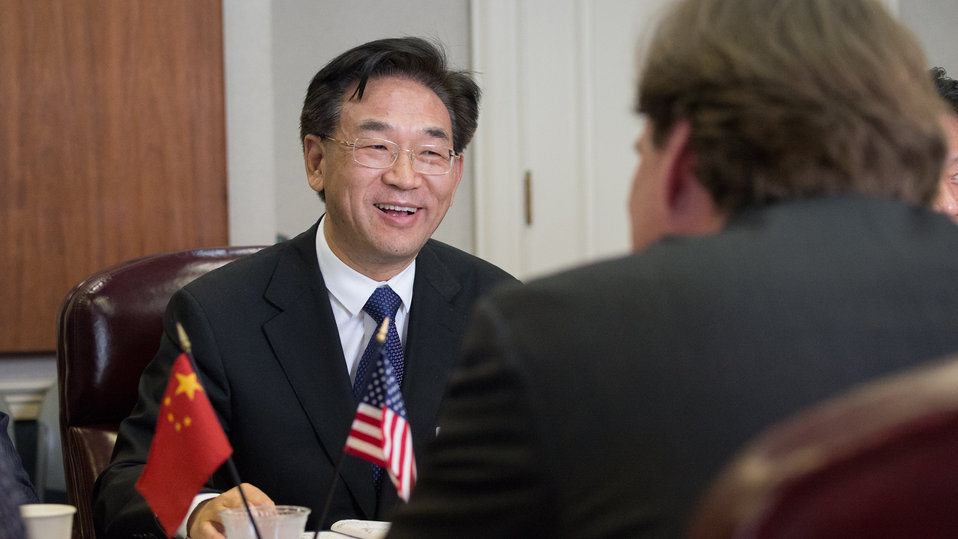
The People’s Republic of China Ministry of Agriculture (MOA) Vice Minister H.E. Zhang Taolin heads the Chinese Agricultural Delegation meeting with U.S. Department of Agriculture (USDA) Under Secretary for Natural Resources and Environment (NRE) Robert Bonnie and other USDA leaders at the USDA headquarters Whitten Building, in Washington, D.C., on Friday June 13, 2014.